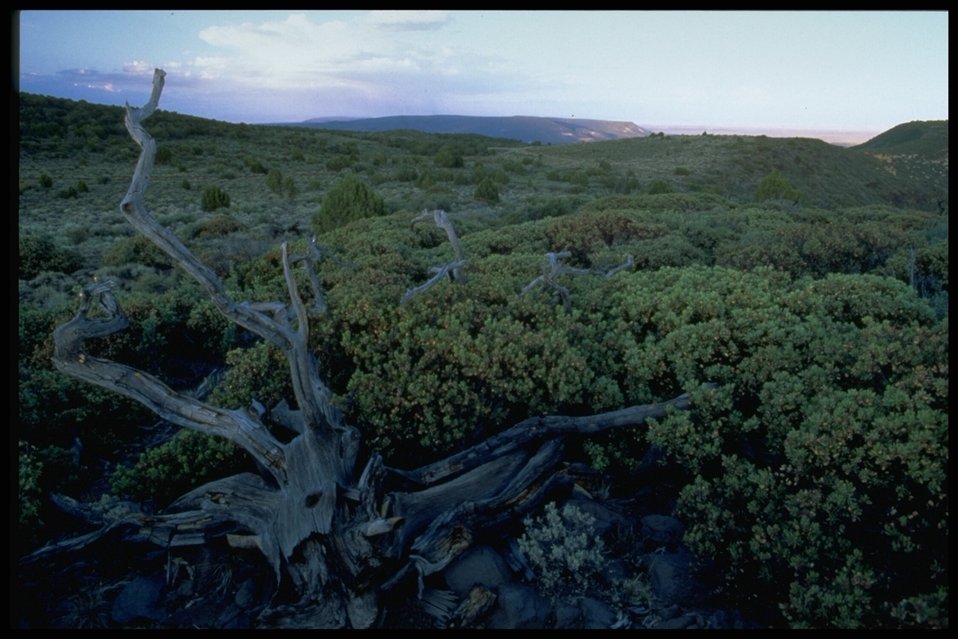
Thick vegetation found at the Parashan National Monument.